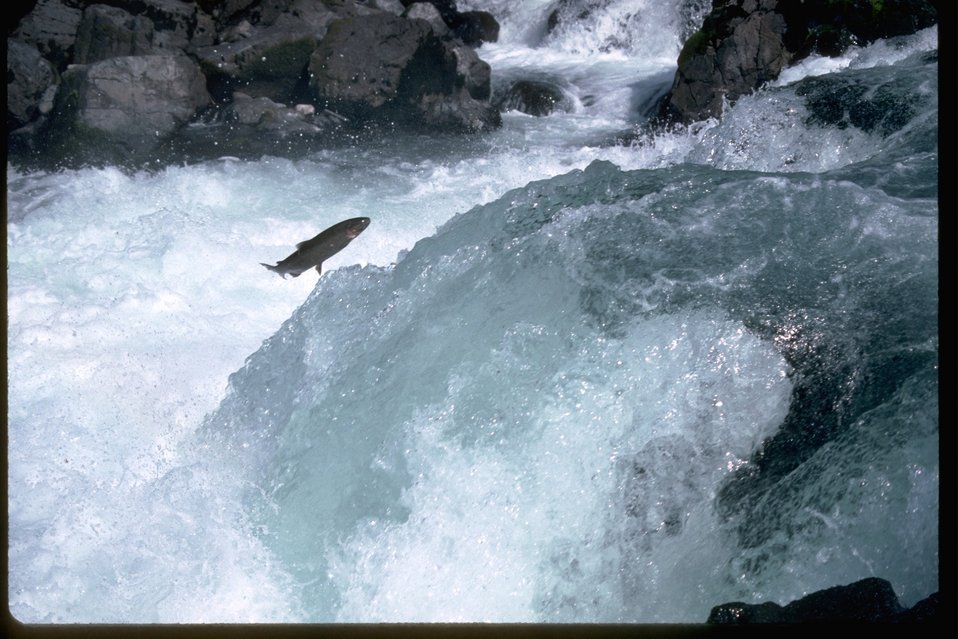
Salmon or Steelhead jumping up falls.